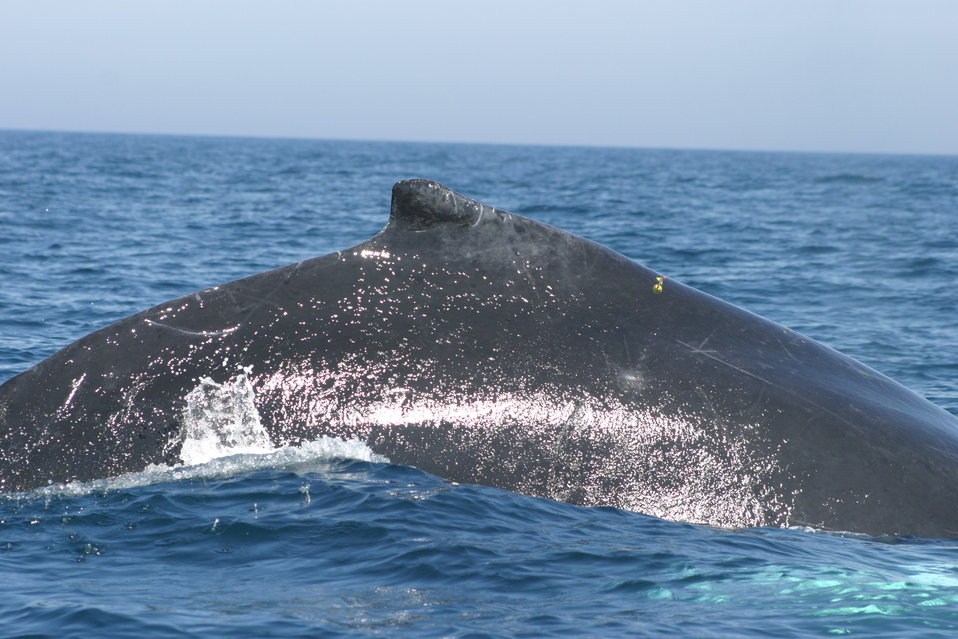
Whale studies off the NOAA Ship DELAWARE II.